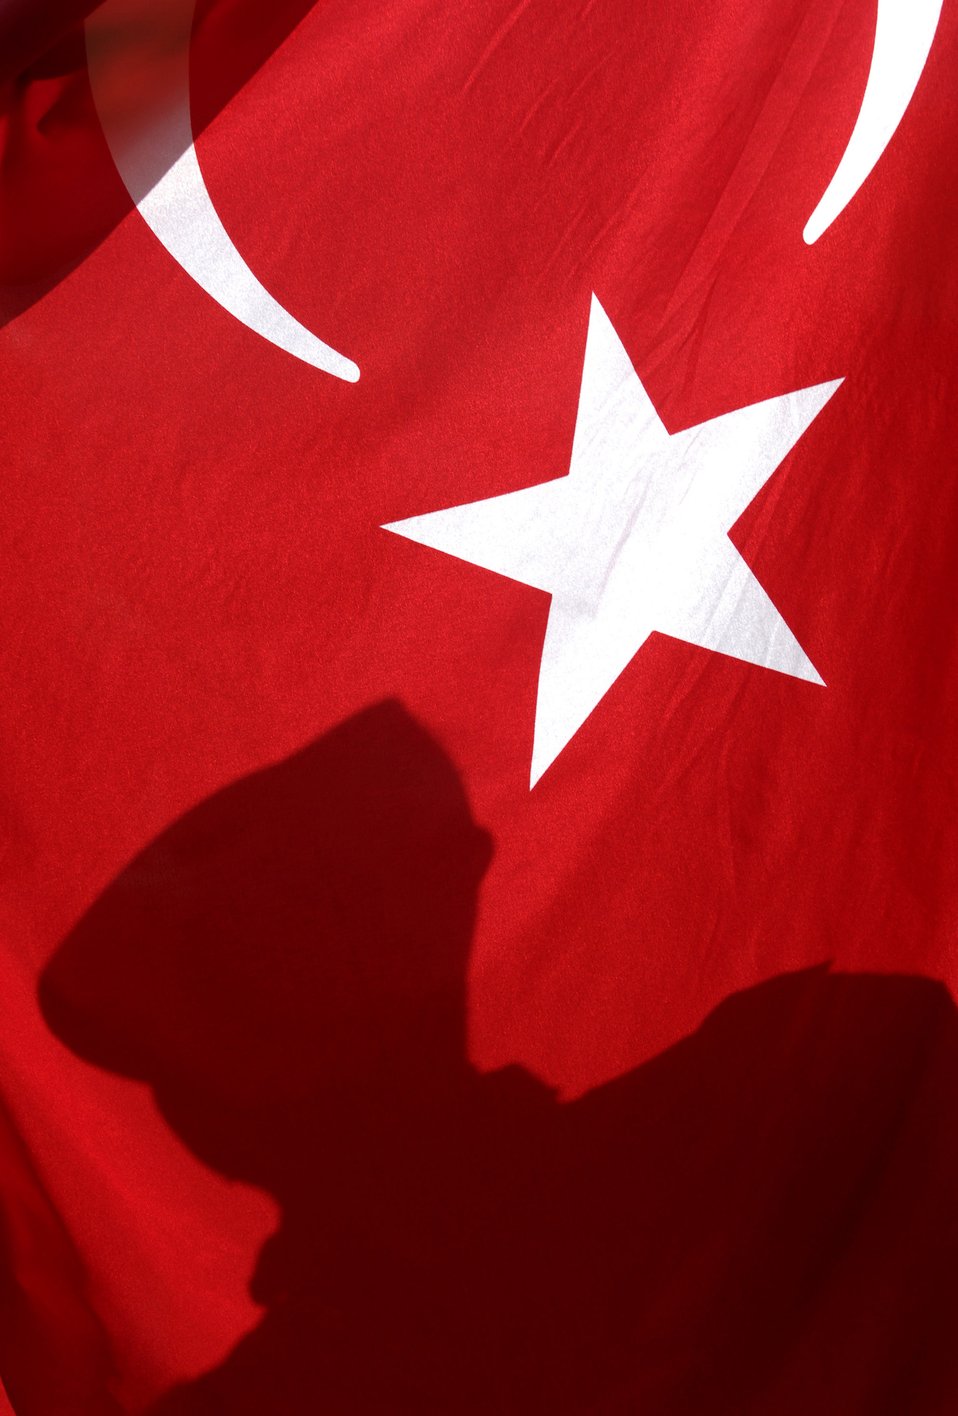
Country pride

A member of the Turkish Air Force waves his country's flag after the 1.5 mile run portion of the Fit-to-Fight competition at Air Mobility Command's Rodeo 2007, held at McChord Air Force Base, Wash., July 21. Rodeo is a readiness competition for U.S. and international mobility air forces.